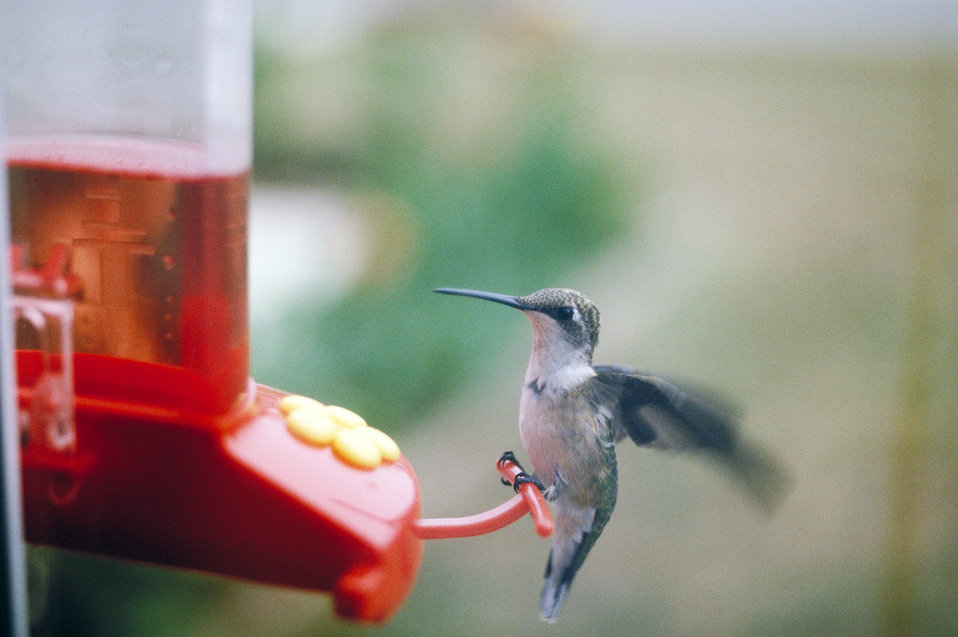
A female ruby-throated humming bird feeds at a home feeder. Hummingbirds are one of nature’s many pollinators for flowers and crops and are crucial in production for fruits and vegetables.